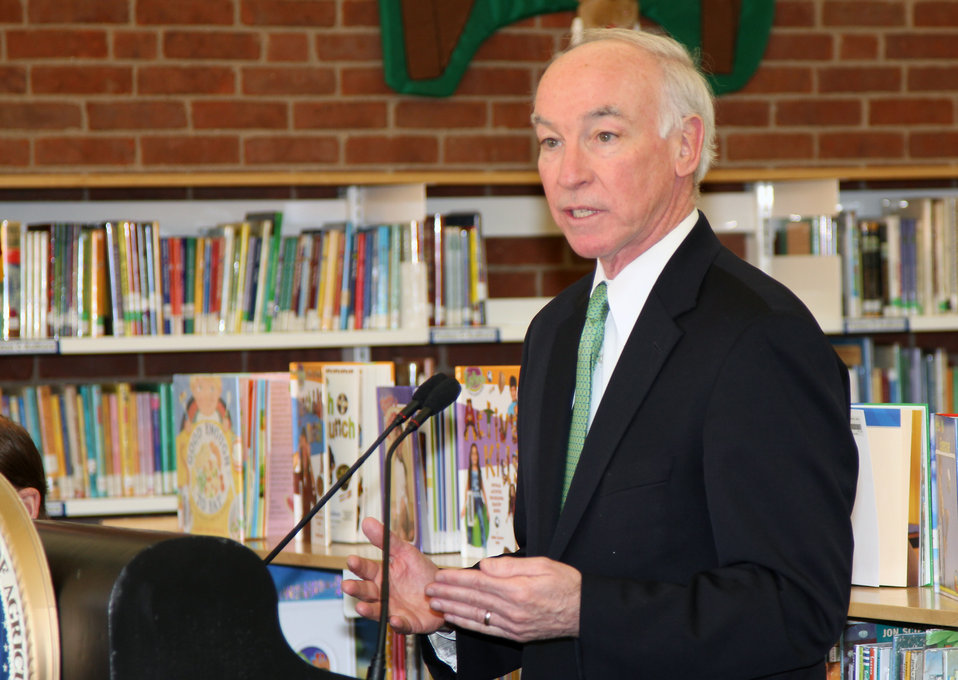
Congressman Joe Courtney speaks during Secretary Vilsack’s visit to the Henry A. Wolcott Elementary School in West Hartford, Connecticut to outline the U.S. Department of Agriculture (USDA) efforts to raise a healthier generation of Americans on Friday, April 5, 2013.